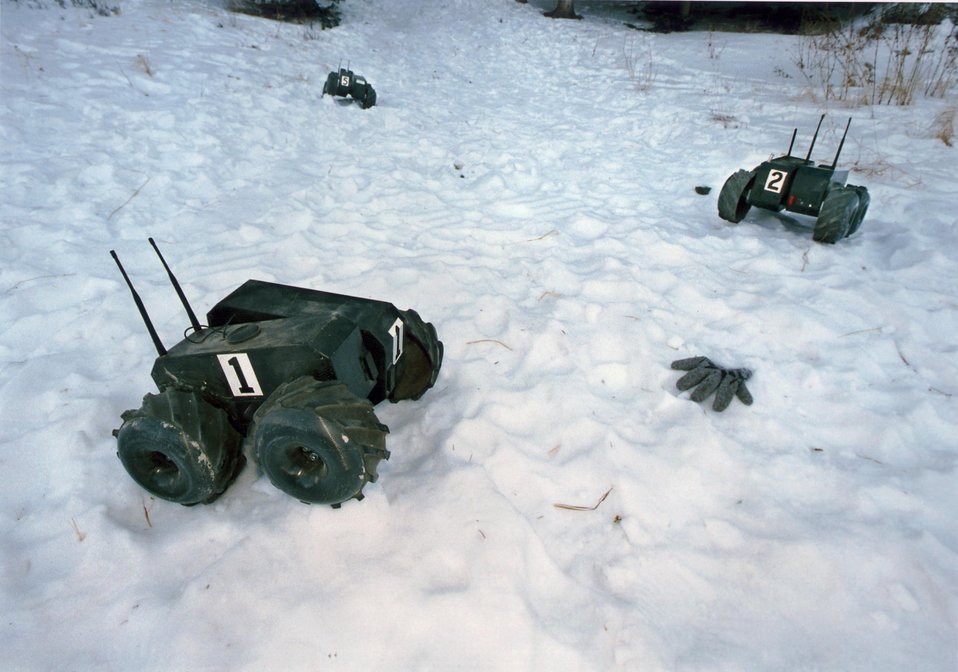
SANDIA DEMONSTRATION OF A TEAM OF ROBOTS RESCUING A SKIER BURIED IN AVALANCHE.

A COMPUTER PROGRAM DEVELOPED AT SANDIA USES A GROUP OF ROBOTS TO RAPIDLY LOCATE PEOPLE BURIED UNDER AN AVALANCHE. THE SYSTEM CAN BE USED BY PEOPLE CARRYING MINICOMPUTERS, GLOBAL POSITIONING RECEIVERS, AND SIMPLE RADIO EQIUPMENT TO FIND PEOPLE BURIED IN AVALANCHES FOUR TIMES FASTER THAN CONVENTIONAL METHODS.